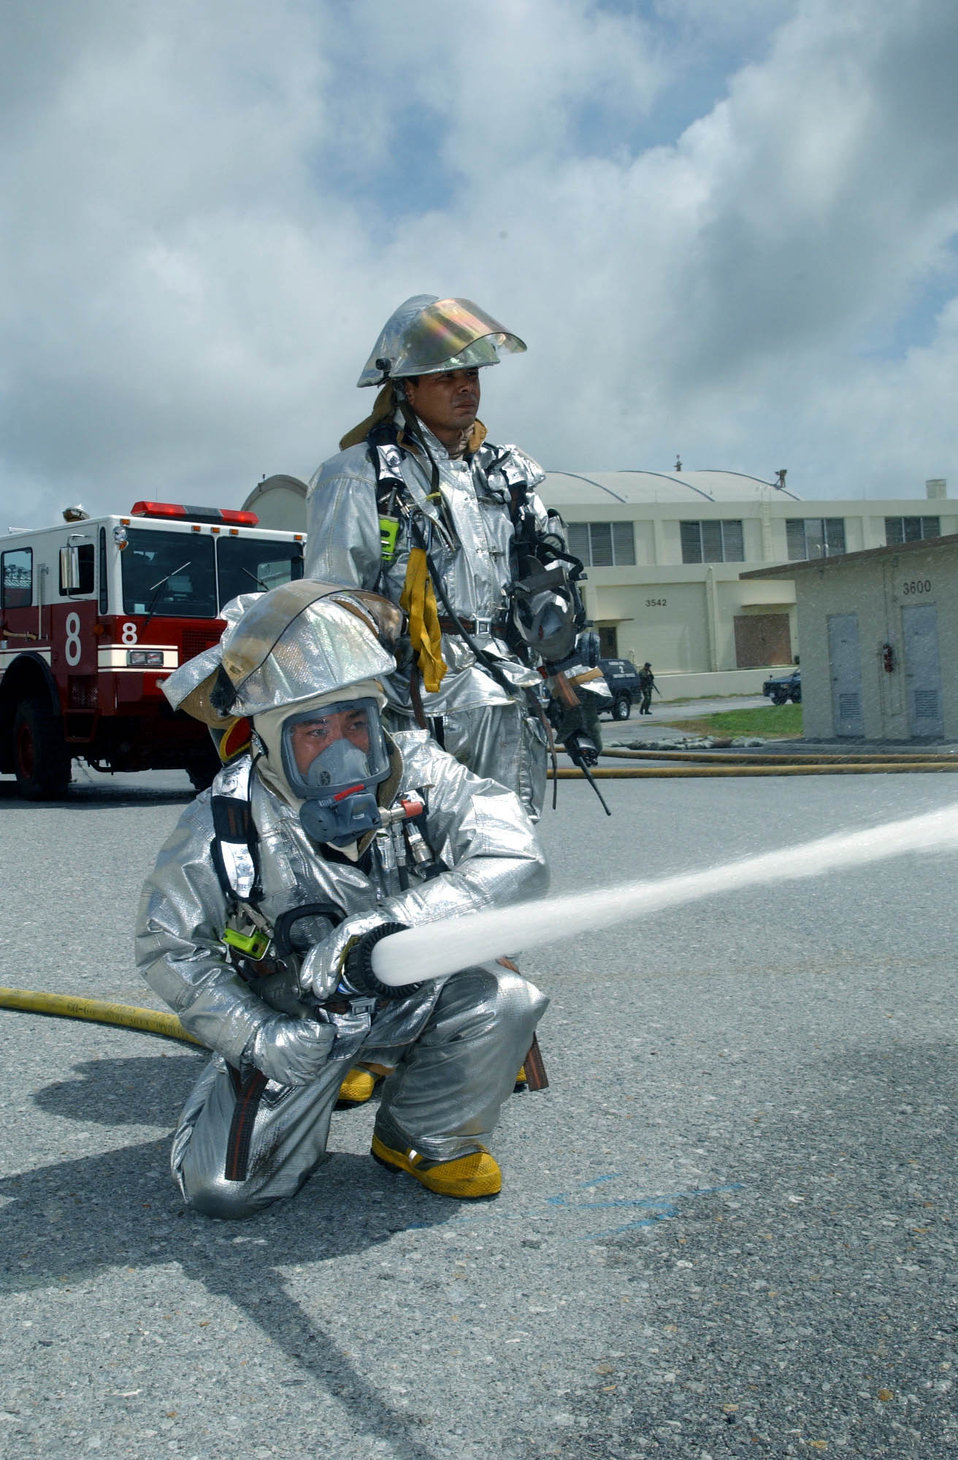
Fighting fires

KADENA AIR BASE, Japan -- Iha Naoki extinguishes flames during a simulated fire during the 18th Wing's operational readiness exercise here Aug. 22. Mr. Naoki is a firefighter assigned to the 18th Civil Engineer Squadron.